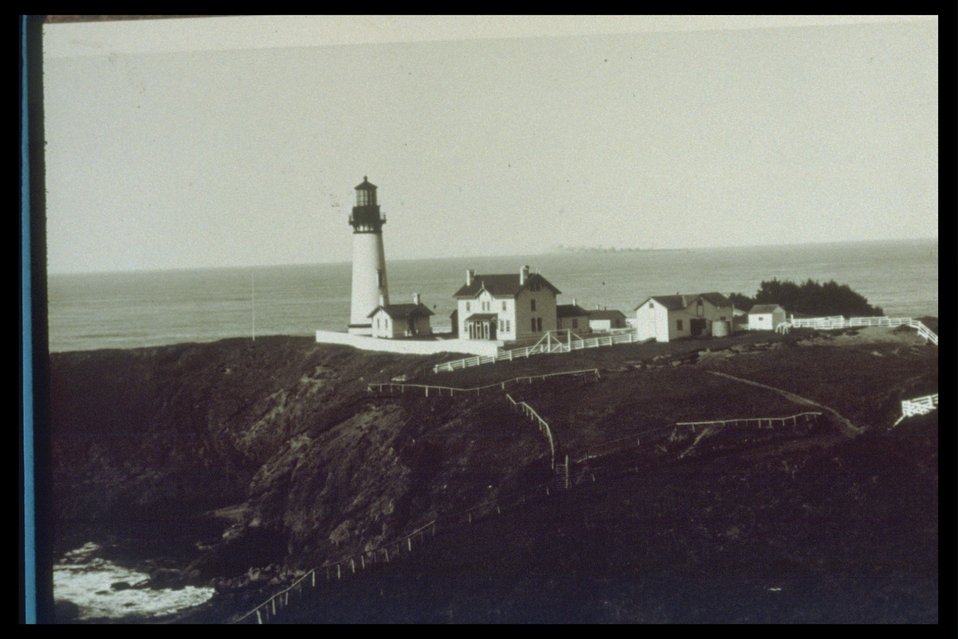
Early Yaquina Head Lighthouse, keeper's house, barn, and fences.